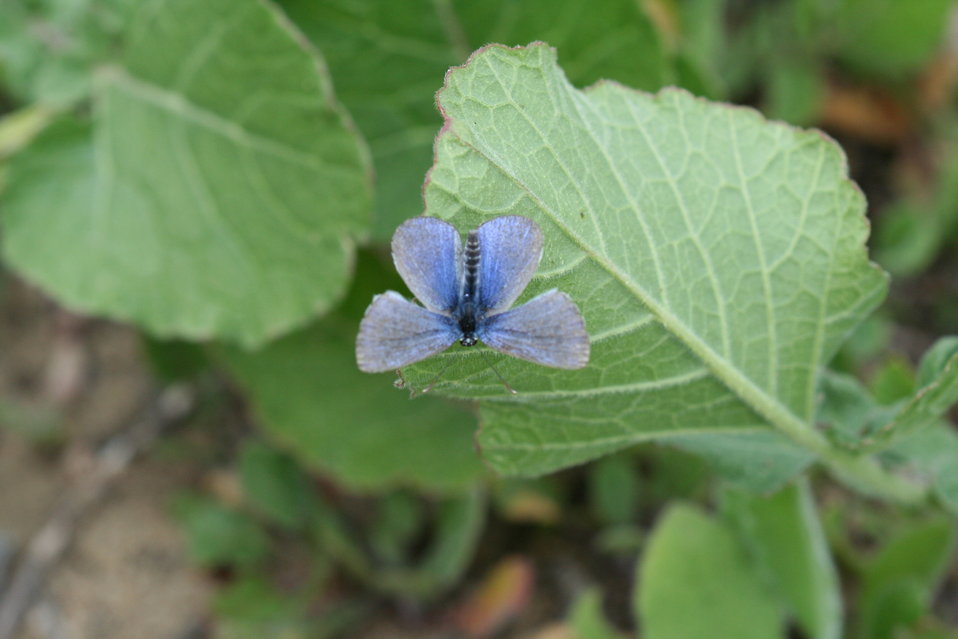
endangered Palos Verdes blue butterfly

. Jane Hendron/USFWS